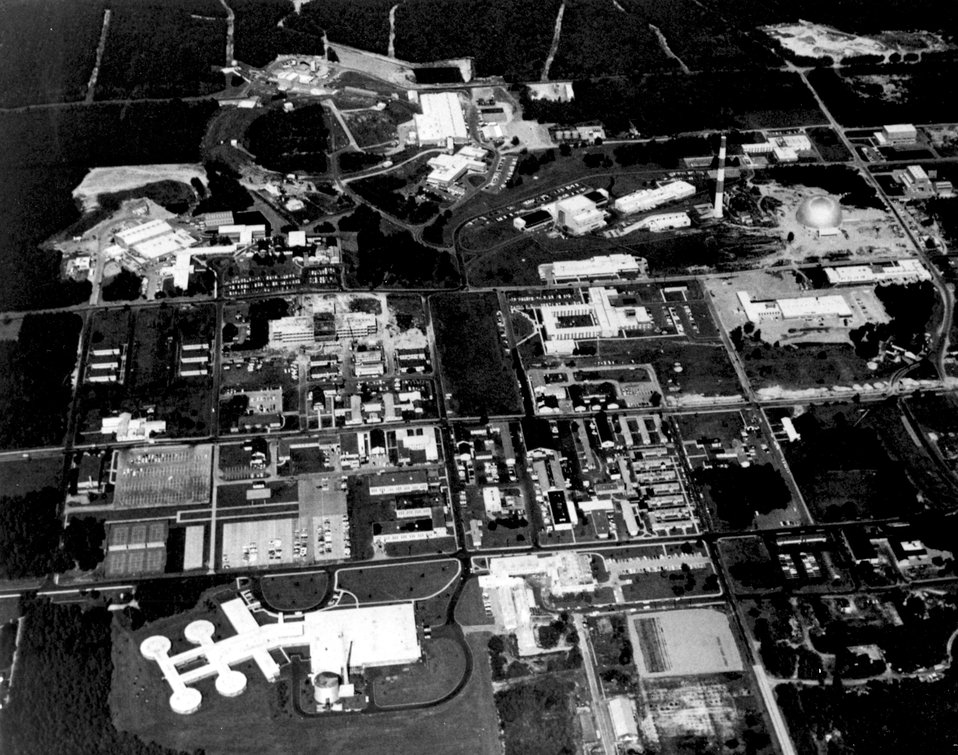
Aerial view of Brookhaven National Laboratory.